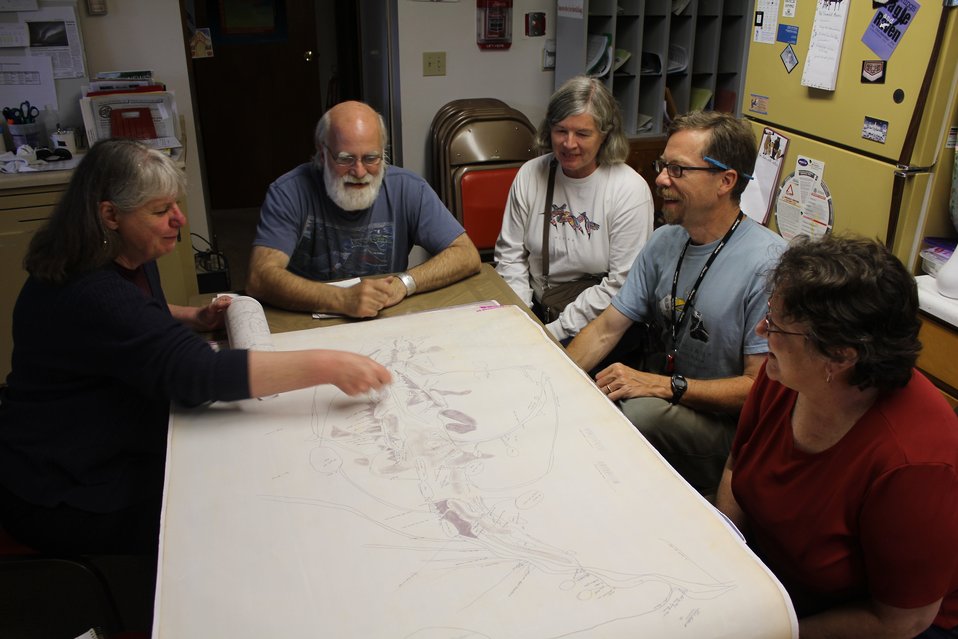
various Alaska historical and cultural experts at the Sheldon Museum and Cultural Center in Haines. Lee Heinmiller facing camera, head of Alaska Indian Arts Inc. An adopted member of the Tlingit nation.